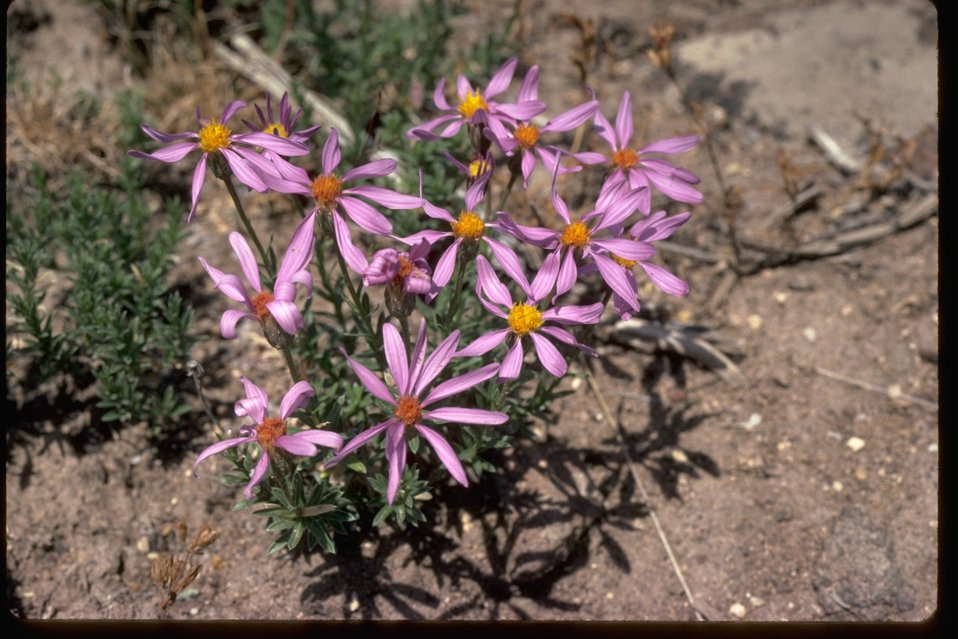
Aster Scopulorum